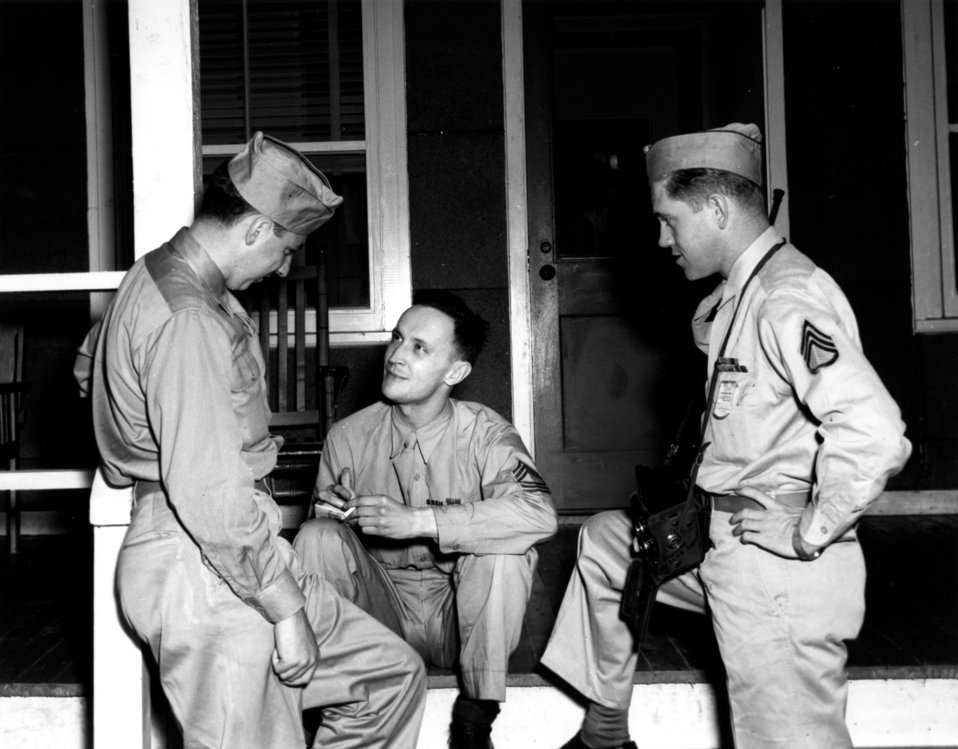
Army Activity at Oak Ridge